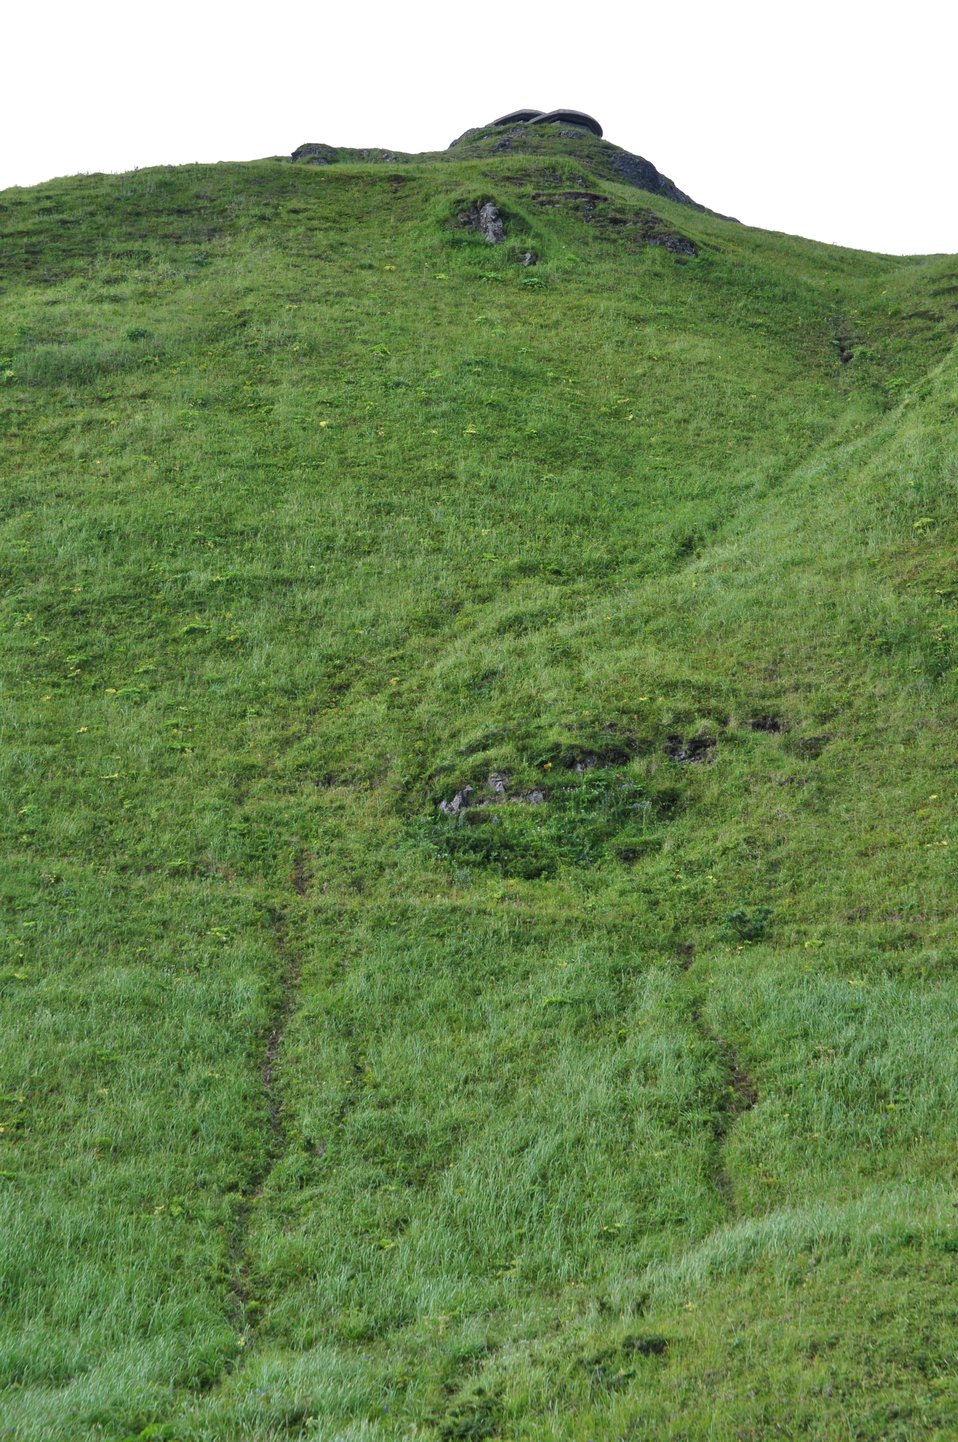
The path up to a World War II lookout station seen at the top of the image.